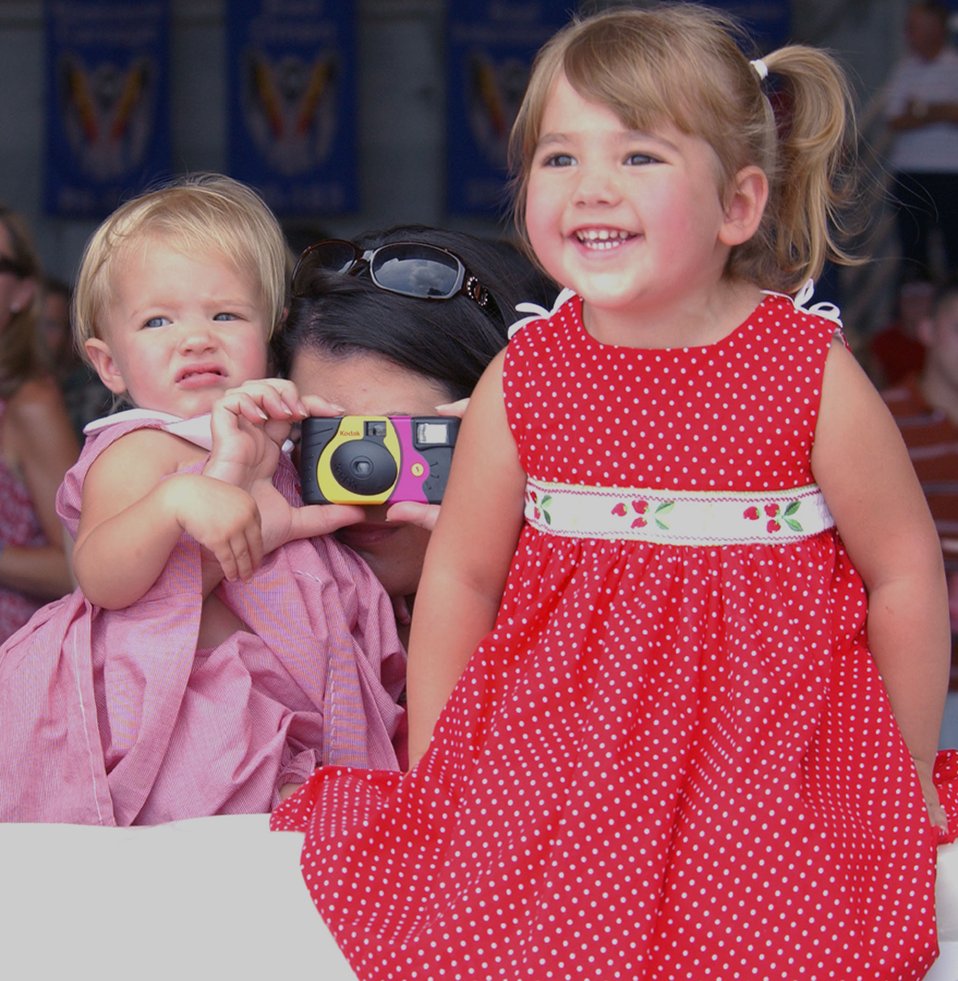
Happy holiday homecoming

Two-year-old Sady Fells watches excitedly as the plane carrying her father, Senior Airman Skip Fells, rolls in July 4 at Hurlburt Field, Fla. Her 18-month-old sister, Emily, also looks on as mom Monica Fells takes a picture of the moment. More than 200 Hurlburt Field Airmen enjoyed the Fourth of July as they were reunited with their loved ones after deployments to Iraq and Afghanistan. Airman Fells is from the 20th Special Operations Squadron.